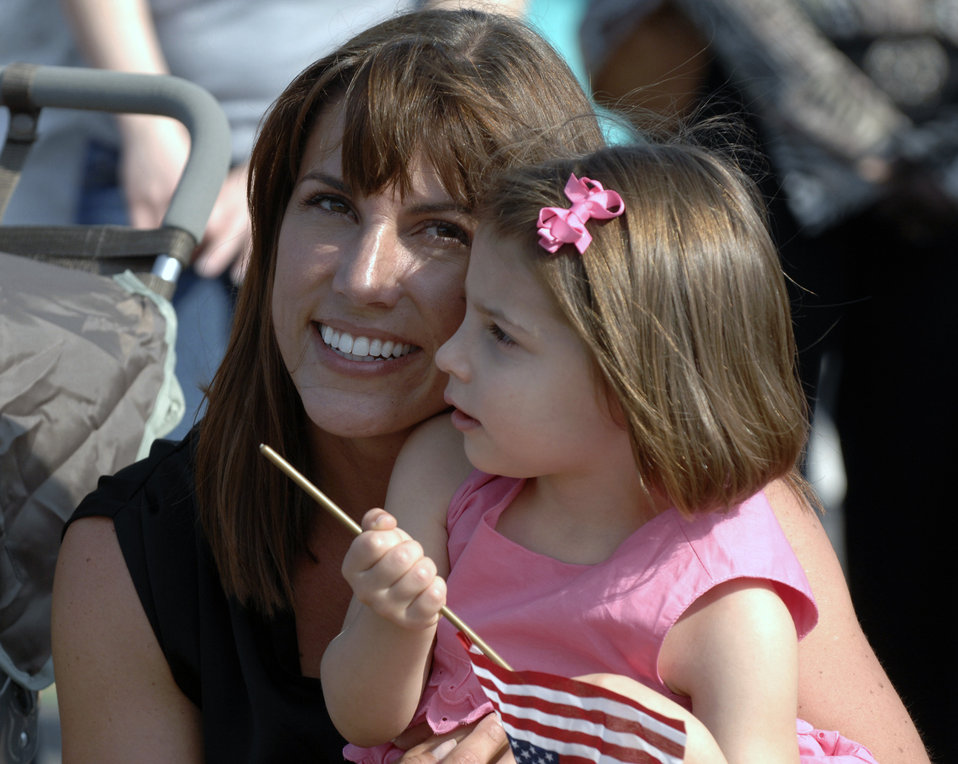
Mission complete: Charleston Airmen return home

Katie Hall and daughter, Sophia, wait to reunite with Capt. Zachary Hall May 3 at Charleston Air Force Base, S.C. Captain Hall and more than 140 Airmen from the 16th Airlift Squadron returned from their 120-day deployment to the Middle East in support of operations Enduring Freedom and Iraqi Freedom and operations in the Horn of Africa.